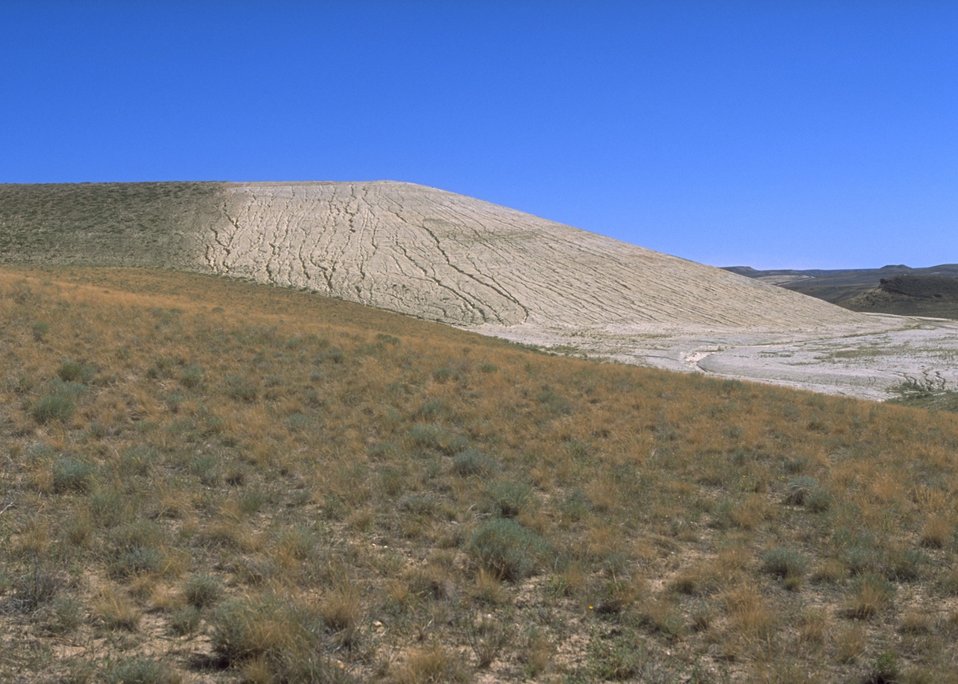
Gas Hill Abandoned Mine Lands in various stages of rehabilitation, Lander Field Office.